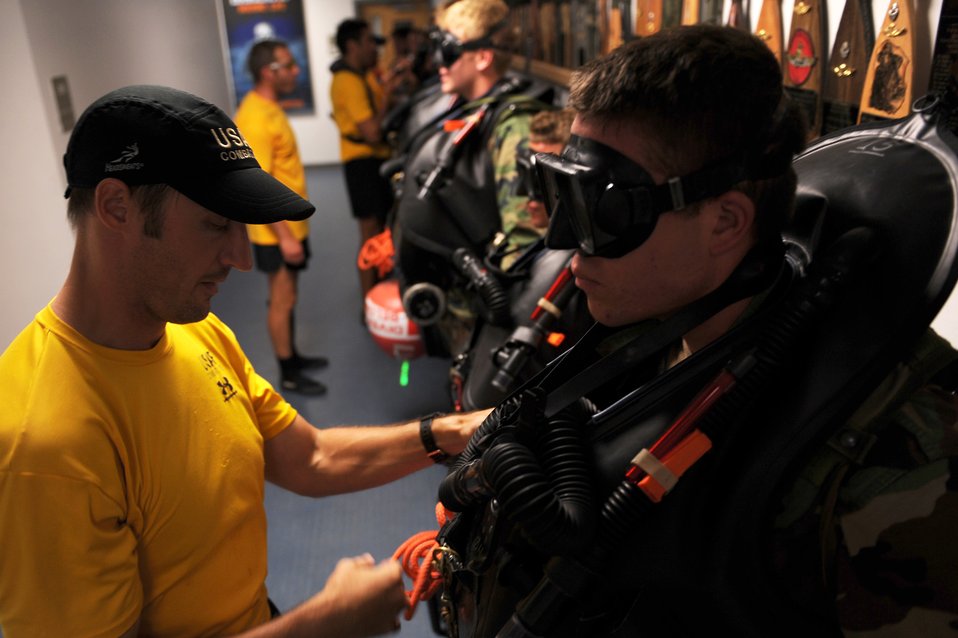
Combat Controllers

Airmen line up for a gear inspection before heading out for an early morning dive during their combat dive course June 10, 2010, at Panama City Beach, Fla. The Airmen are combat controllers-in-training assigned to the 342nd Training Squadron Det. 2.